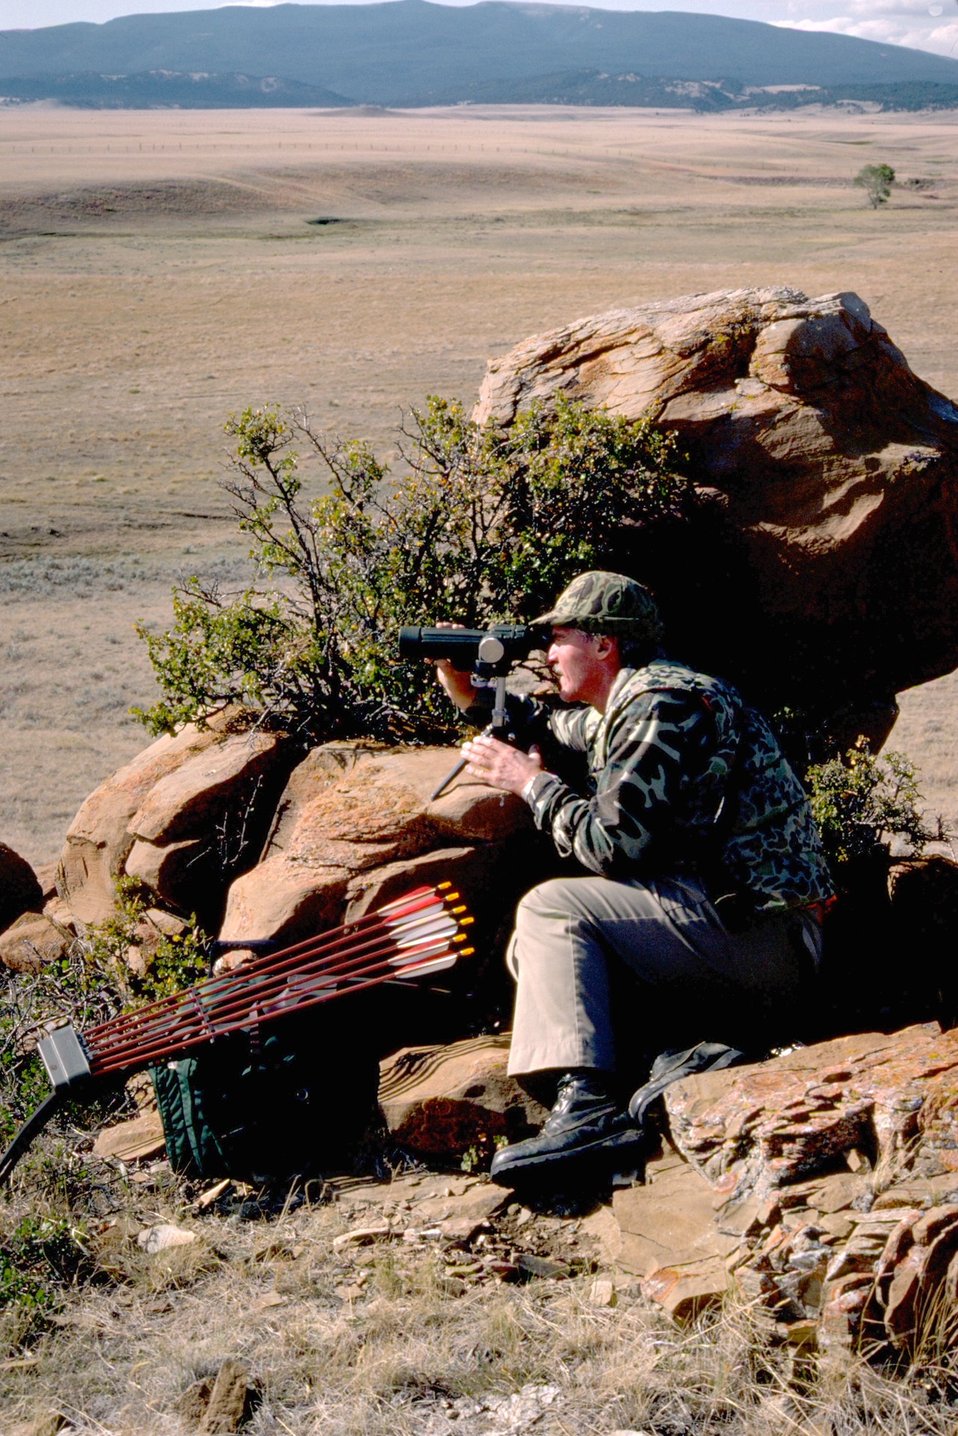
Archery hunter with scope